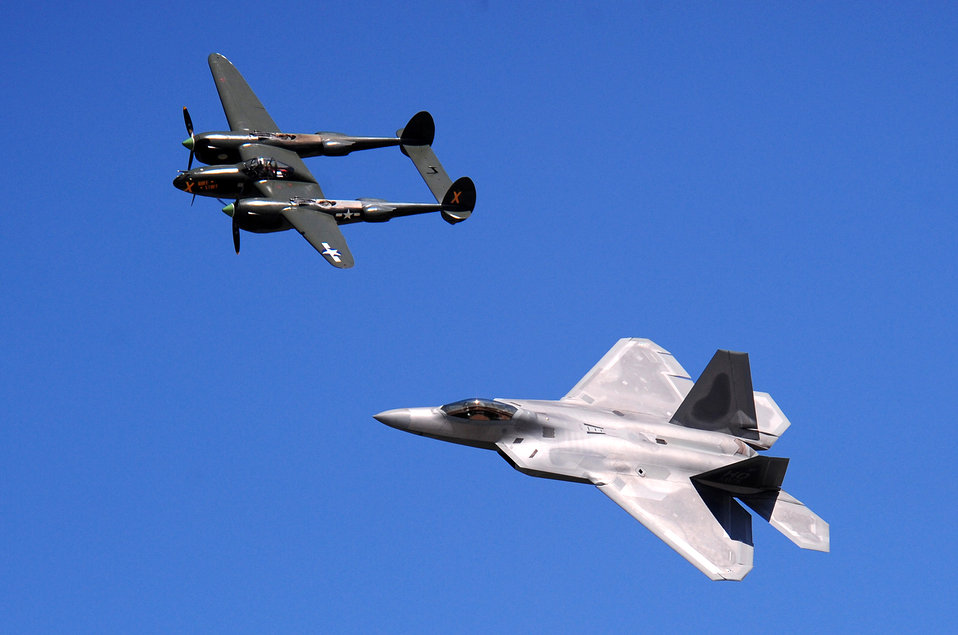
Past to present

A heritage flight at Offutt Air Force Base, Neb., that included a P-38 Lightning of the Army Air Forces and an F-22 Raptor demonstrates the proud heritage of military aviation Aug. 28, 2010, over the past 60 years